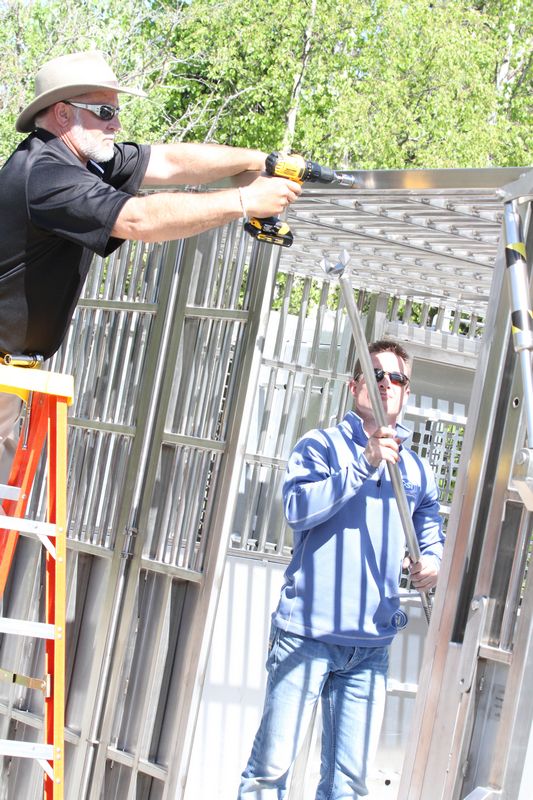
Press Conference on the polar bear holding module. USFWS/Rose Primmer